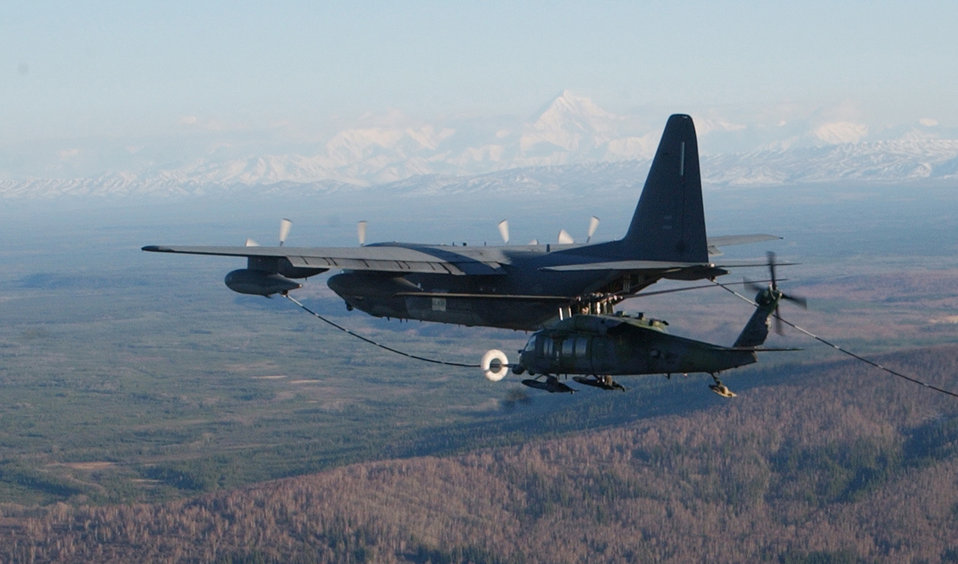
Cope Thunder training

OVER WHITE MOUNTAINS, Alaska -- An HC-130 refuels an HH-60G Pave Hawk helicopter during Exercise Cope Thunder here April 28. The annual exercise involves nine units and about 600 Airmen and 50 aircraft from Pacific Air Forces, Air Combat Command and the Alaska Air National Guard. The helicopters are assigned to the 210th Rescue Squadron's Detachment 1 at nearby Eielson Air Force Base.